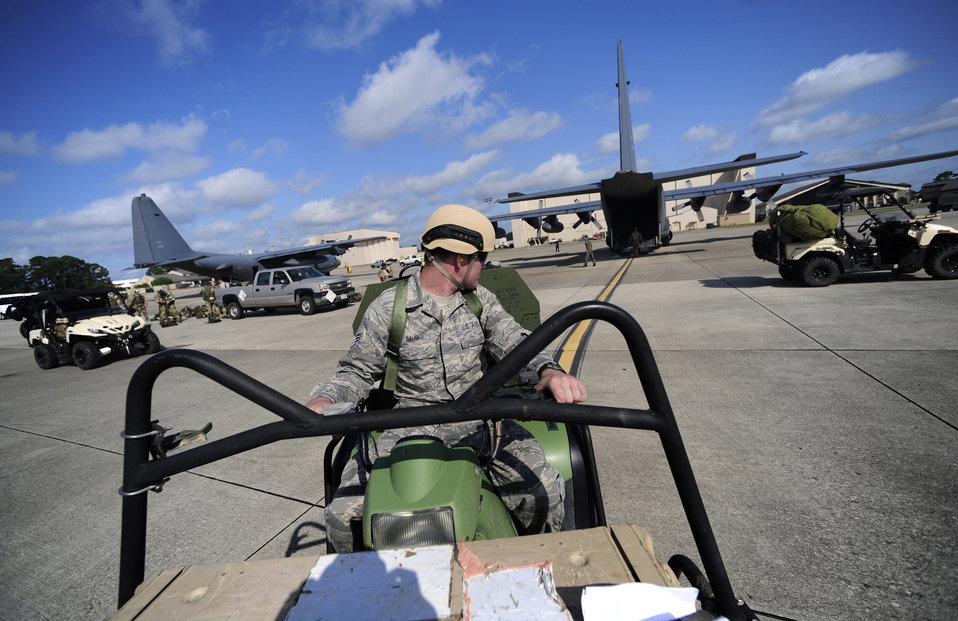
Operations Nimble Response

Staff Sgt. Charles Daum backs up an all-terrain vehicle onto MC-130P Combat Shadow during Exercise Operation Nimble Response May 11, 2011, at Hurlburt Field, Fla. Operation Nimble Response is an exercise to hone humanitarian and disaster relief efforts. Close to 50 personnel from Head Quarters Air Force Special Operations Command, 1st Special Operations Wing, and 280th Combat Communications Squadron, in coordination with USAID, worked together to improve disaster response. Sergeant Daum is with the 280th Combat Communications Squadron.